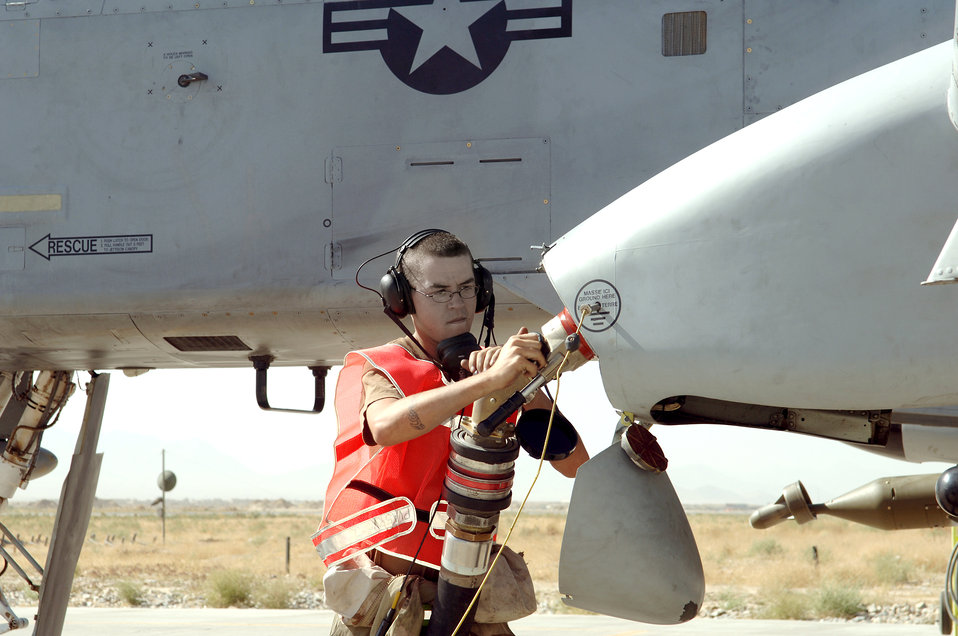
Airpower key to successful voting

BAGRAM AIR BASE, Afghanistan -- Senior Airman Nathan Albers refuels an A-10 Thunderbolt II here. The aircraft, along with EC-130H Compass Calls and U.S. Navy EA-6B Prowlers, have stepped up efforts throughout Afghanistan to deter enemy aggression and help ensure voter safety. Airman Albers is a crew chief deployed from Davis-Monthan Air Force Base, Ariz.